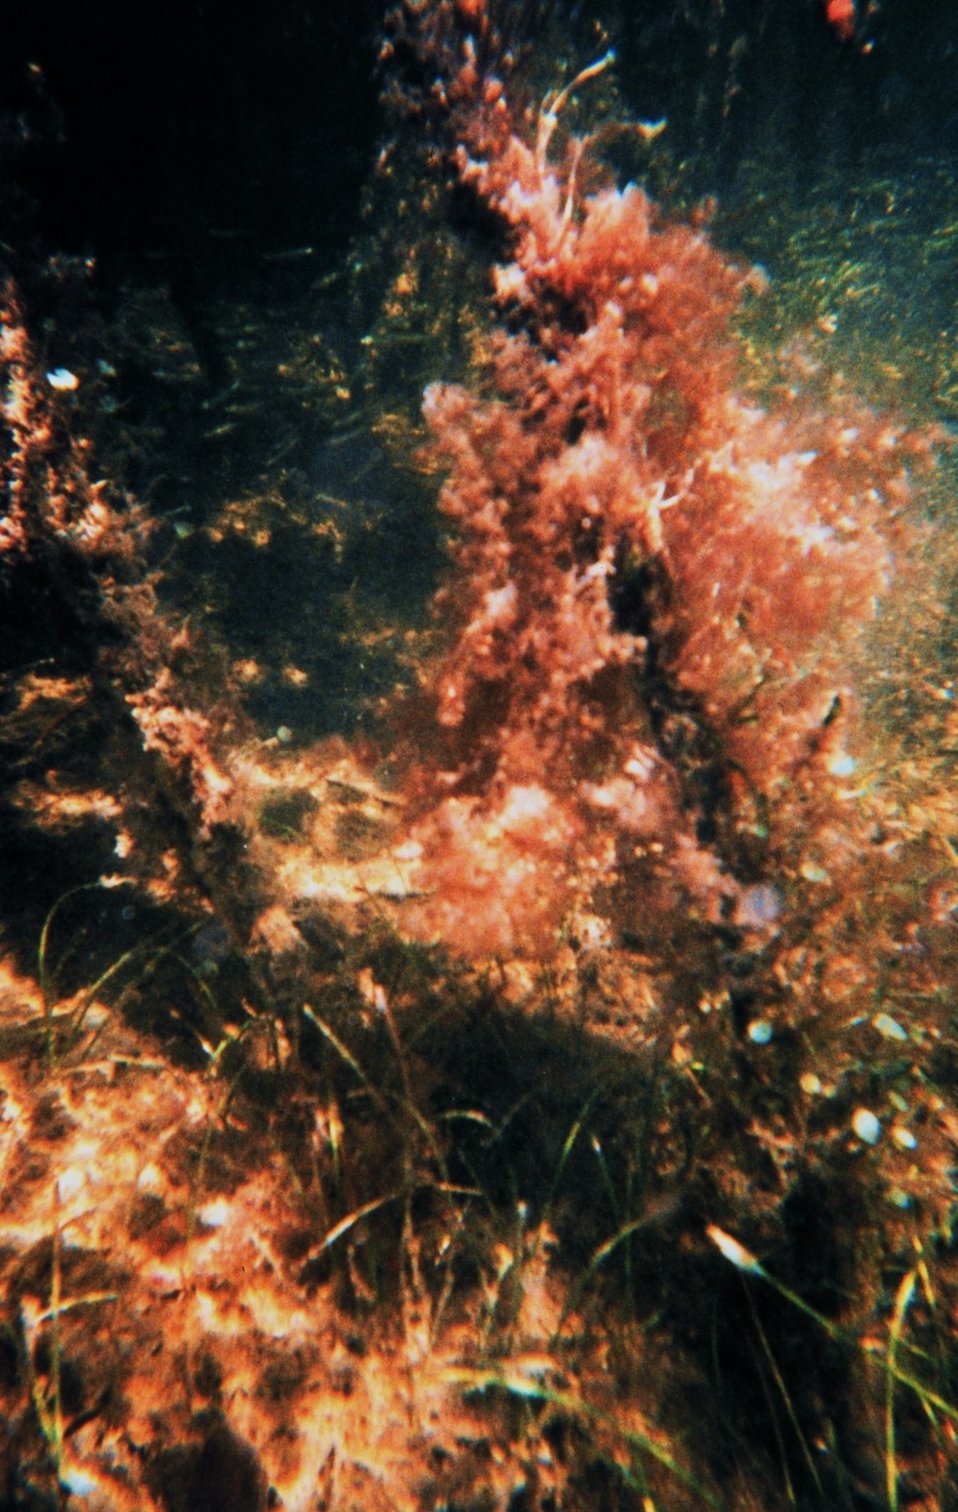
Mangrove root with soft coral (reddish) attached and seagrass below